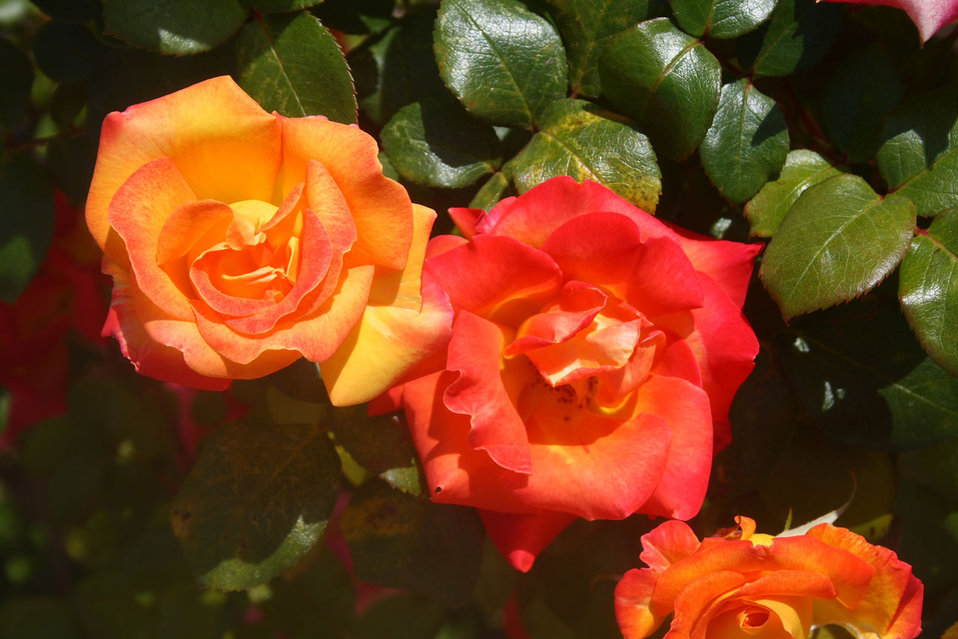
Orange and red roses

From a neighborhood photo walk on 14 june 2009 in huntington beach, ca.